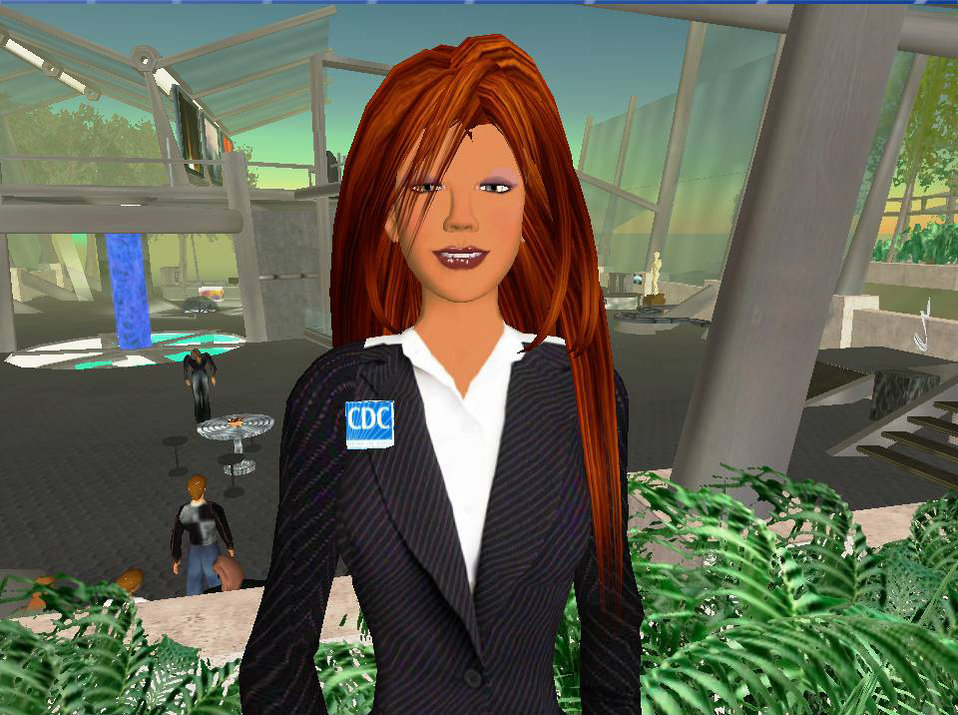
This computer-generated image depicts Hygeia Philo, the CDC's lead avatar in the virtual world of Second Life. This was the forth design stage of the avatar. Customizing an avatar's appearance is a key aspect to community acceptance. In preparation for the first CDC Health Fair, which took place inside Second Life in October, 2006, the avatar was outfitted with a more corporate design for clothing, more realistic facial features and hair, as well as a CDC badge, in order to more fully simulate a trade show booth attendant, and to reinforce the link to the CDC's brand identity. Dr. John Anderton designed Hygeia Philo, whose name is based on the Greek meaning 'lover of health', to be the modern muse of health, serving as lead health spokesperson and health educator in this new virtual space. See PHIL 10002, 10005, 10007, 10008, 10009, 10011, 10012, 10013, 10014, and 10015 for additional images of Ms. Philo.